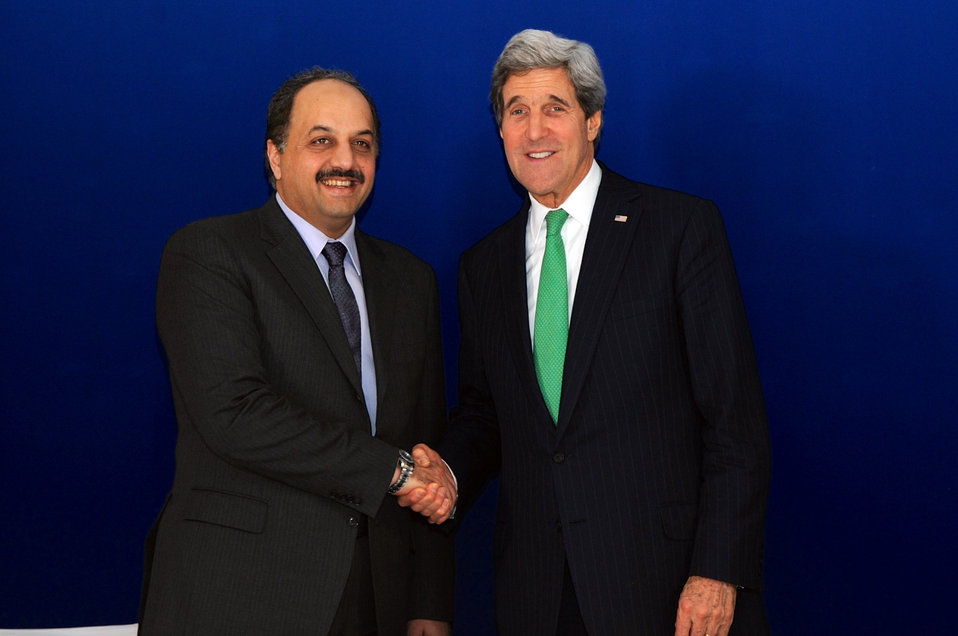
Secretary Kerry Shakes Hands With Qatari Foreign Minister al-Attiyah at Munich Security Conference

U.S. Secretary of State John Kerry shakes hands with Qatari Foreign Minister Khalid al-Attiyah before a bilateral meeting on the margins of the Munich Security Conference in Munich, Germany on February 1, 2014.